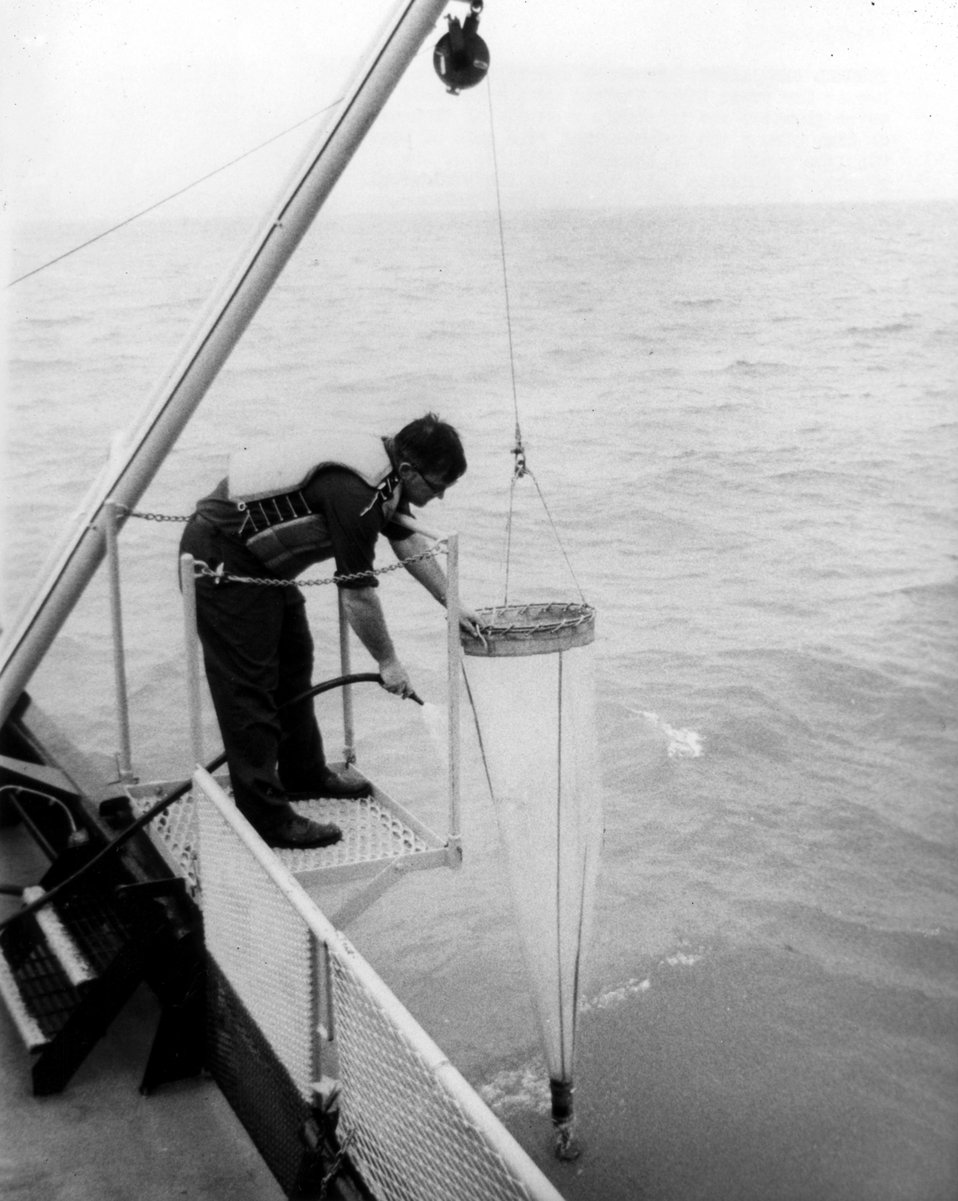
Research specialist from the Center for Great Lakes Studies uses a one-half water plankton meter to obtain a sample of thousands of tiny plants and animals that from part of Lake Michigan's ecological balance.
c.1972